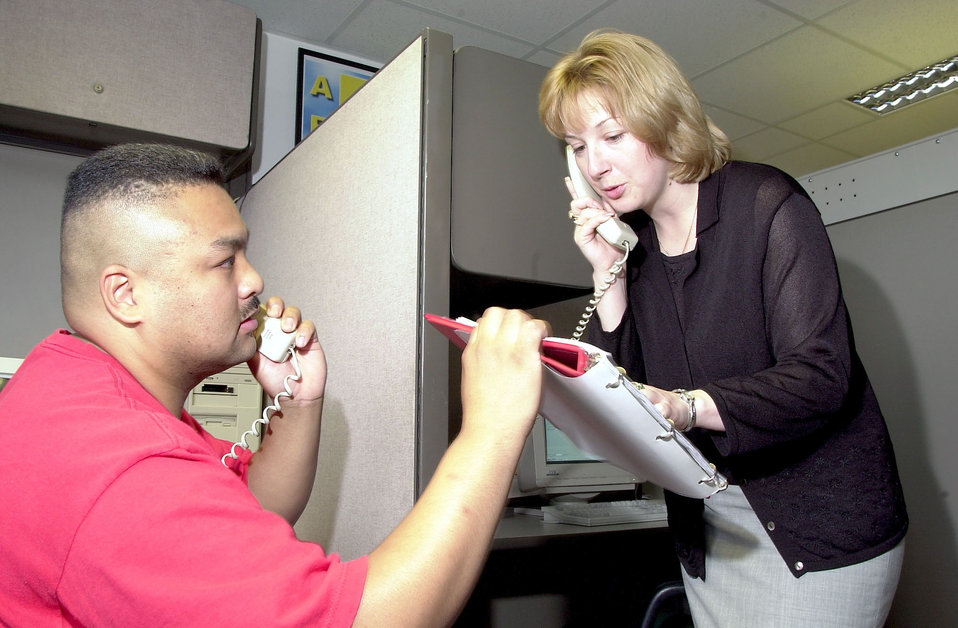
Crisis Hotline

RAMSTEIN AIR BASE, Germany -- Staff Sgt. Norm Leo, a crisis hotline volunteer from the 623rd Air Mobility Support Squadon, here passes information to fellow volunteer Teresa McBride as she responds to a call.